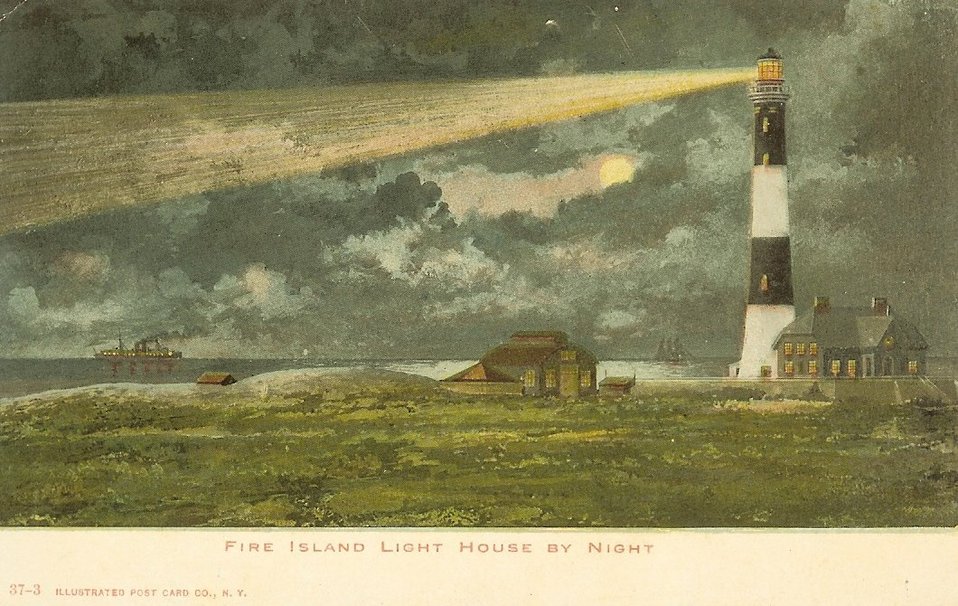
Fire Island Lighthouse